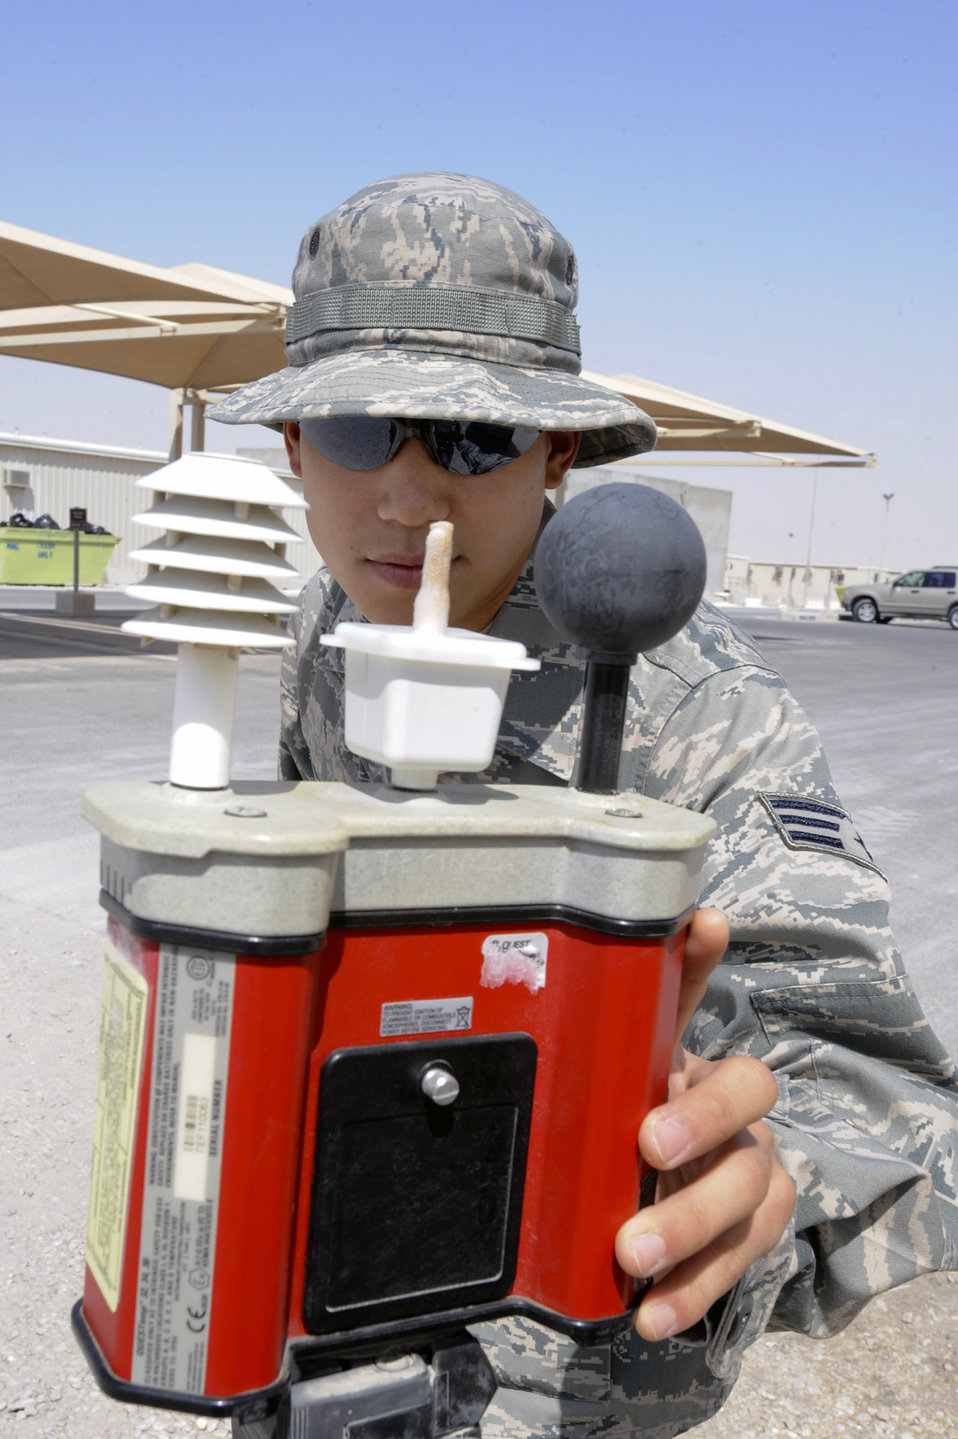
Busy BEEs keep base buzzing

Senior Airman Andrew Kim checks the temperature reading from a wet ball globe thermometer April 7 at an air base in Southwest Asia. The thermometer provides a composite temperature used to estimate the effects of temperature, humidity, wind speed (wind chill) and solar radiation on people. Airman Kim is a bioenvironmental engineering technician with the 379th Medical Group and is deployed from Keesler Air Force Base, Miss.